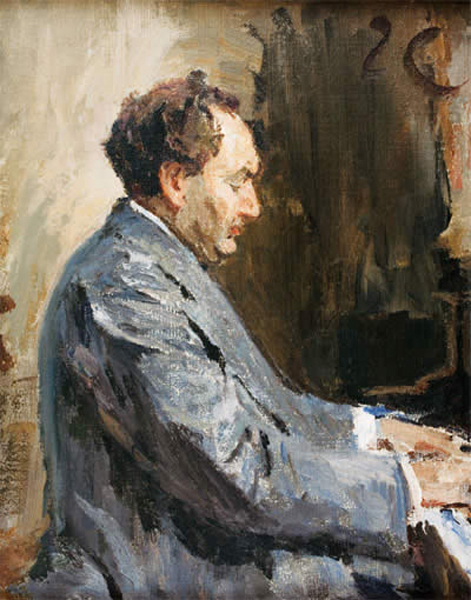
Portrait of the pianist Leopold Godowsky